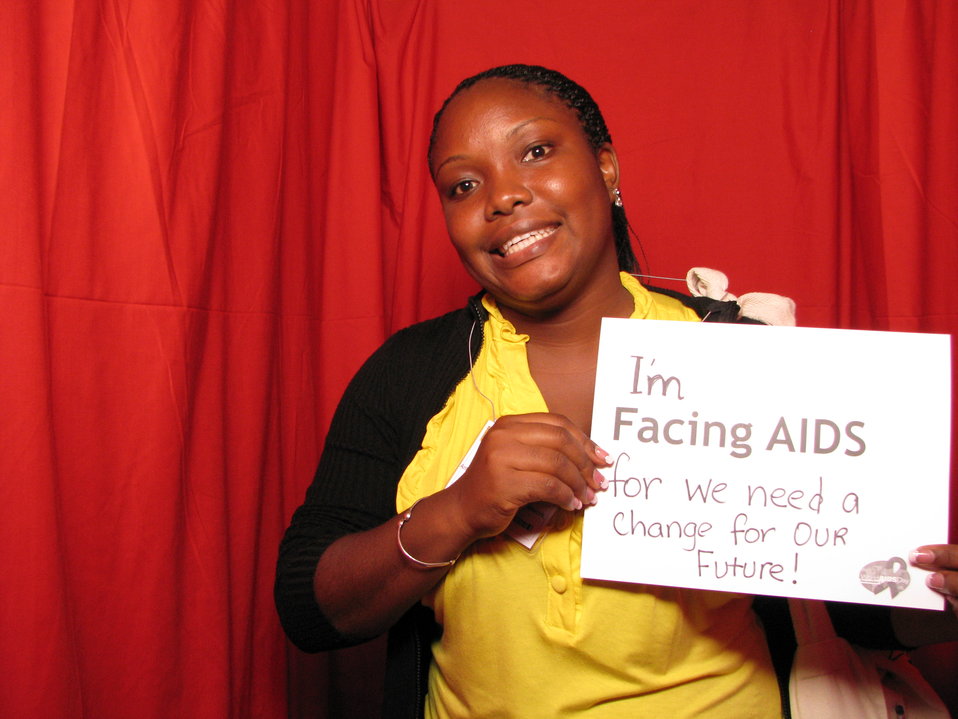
I'm FACING AIDS for we need a change for our future!

From the AIDS.gov photo booth at the U.S. Conference on AIDS, September 2010 (Orlando, FL).